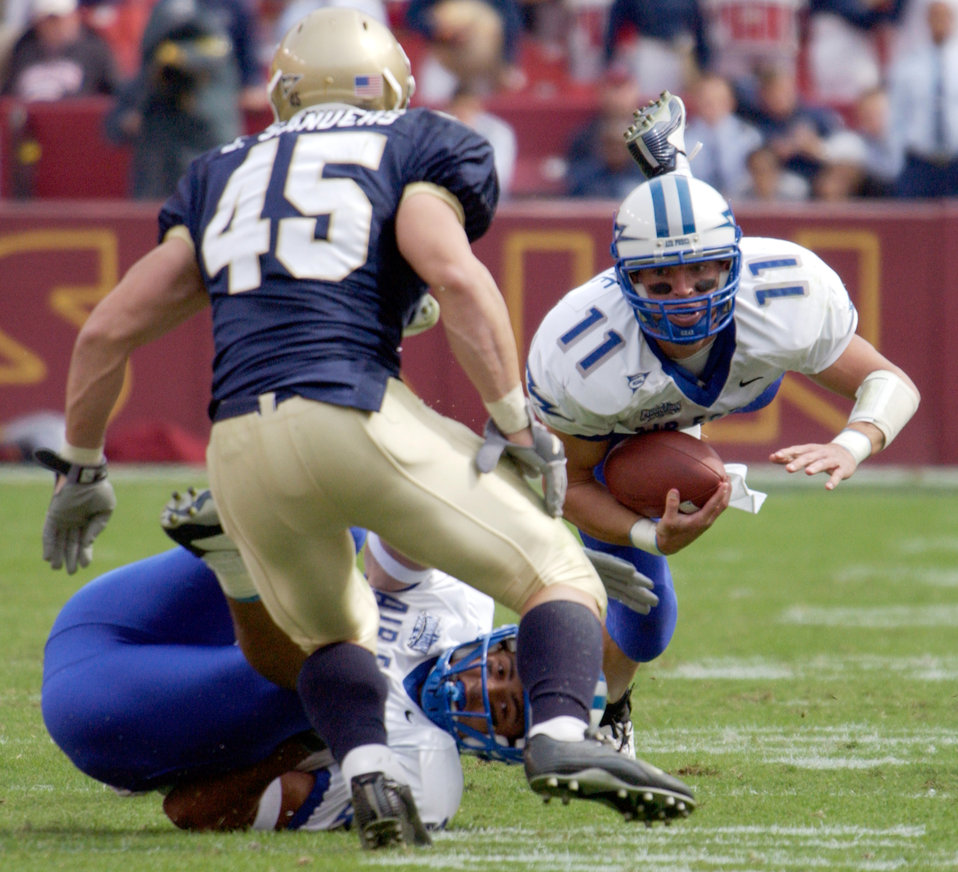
Navy edges Air Force

LANDOVER, Md. -- U.S. Air Force Academy quarterback Chance Harridge fights for yardage during an early drive against the U.S. Naval Academy squad at FedEx Field here Oct. 4. Harridge carried the ball 21 times for 129 yards and despite some promising early success, the Air Force Falcon's fell to the Navy Midshipmen 28-25.